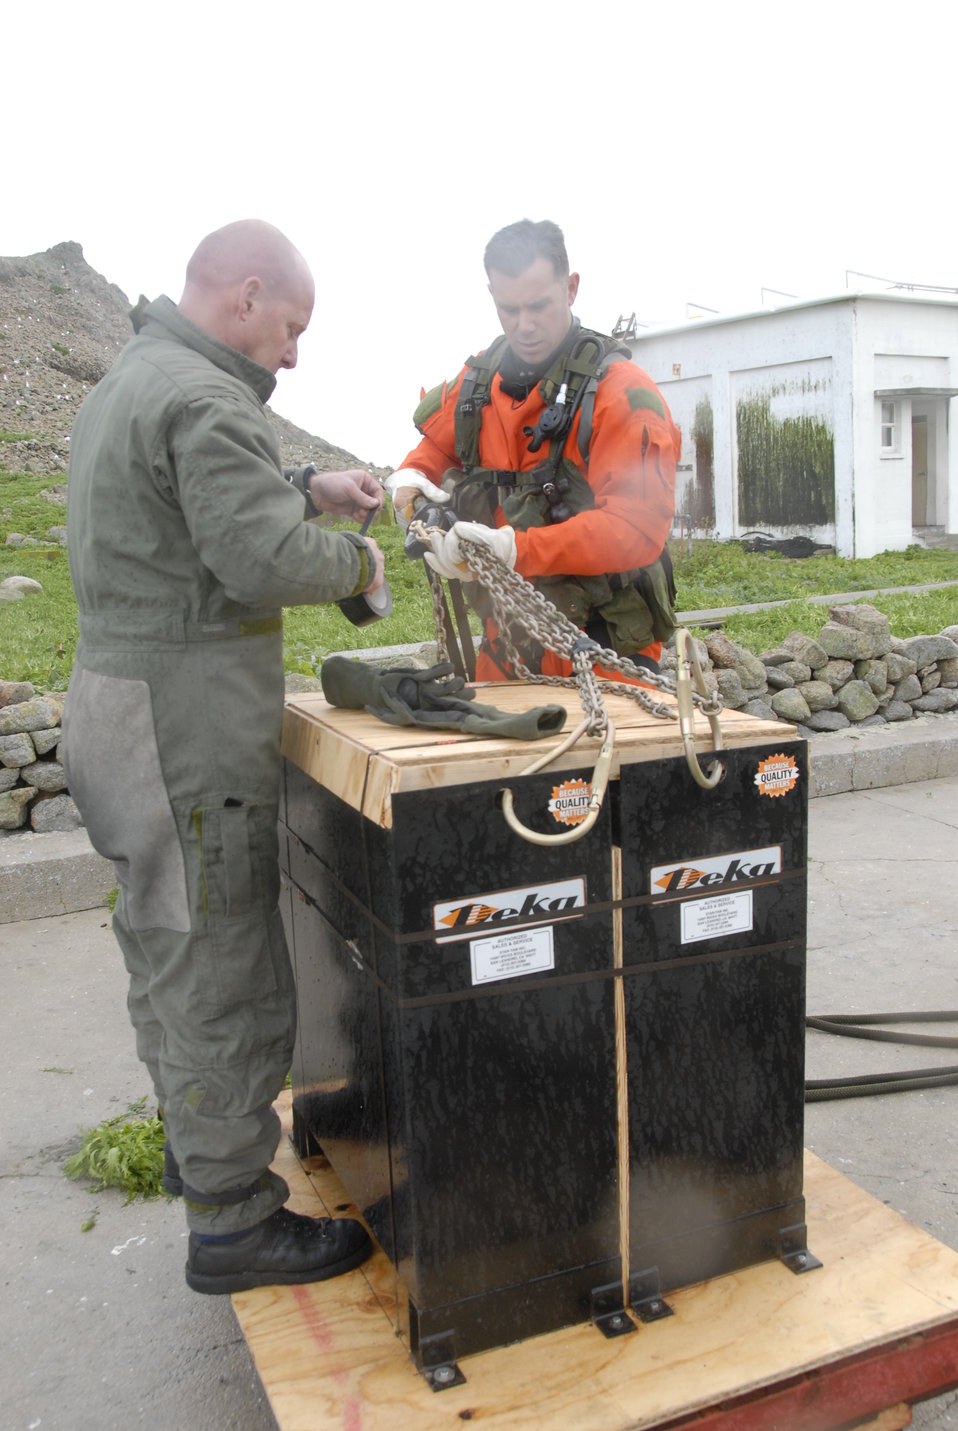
FARALLONS BATTERY MISSION

Tech. Sgt. Christopher Gabor (left) and Chief Master Sgt. Rich Nowaski prepare new photovoltaic batteries Feb. 17 for sling transport by helicopter to the U.S. Fish and Wildlife Service research facility on Farallon Island, which sits about 30 miles west of San Francisco. Aircrews and helicopters from the California Air National Guard's 129th Rescue Wing at Moffett Federal Airfield, Calif., are supporting the FWS by transporting the batteries to power a lighthouse and workshop at the facility. The two NCOs are HH-60G Pave Hawk helicopter flight engineers with the 129th RQW.